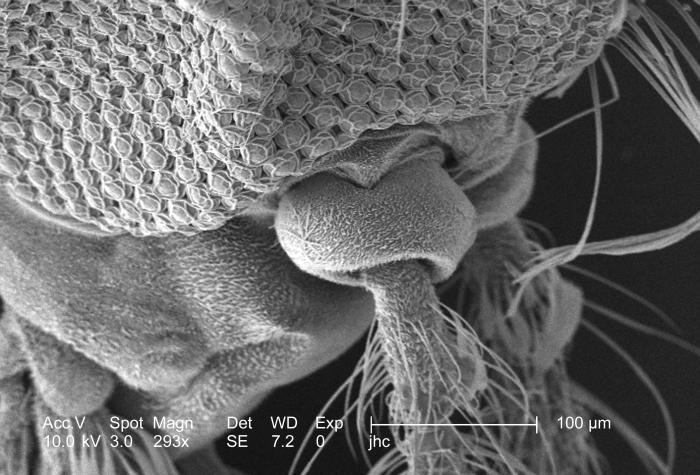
At a moderately magnification of 293x, this scanning electron micrograph (SEM) revealed some of the morphologic features displayed on the exoskeletal surface of an Anopheles dirus mosquito. Highlighted in the field of view was the mosquito's right antennal pedicel as it attached to the head region at the "clypeus". Each antenna consists of three main sections: the pedicel, which attaches the antennae to the clypeus, the "scape", or mid-region between the pedicel and the last region, or "flagellum", which is the composed of varying numbers of smaller segments. Also of note is the left compound eye through which the mosquito seens a composite view of its environment, much like a mosaic depiction.